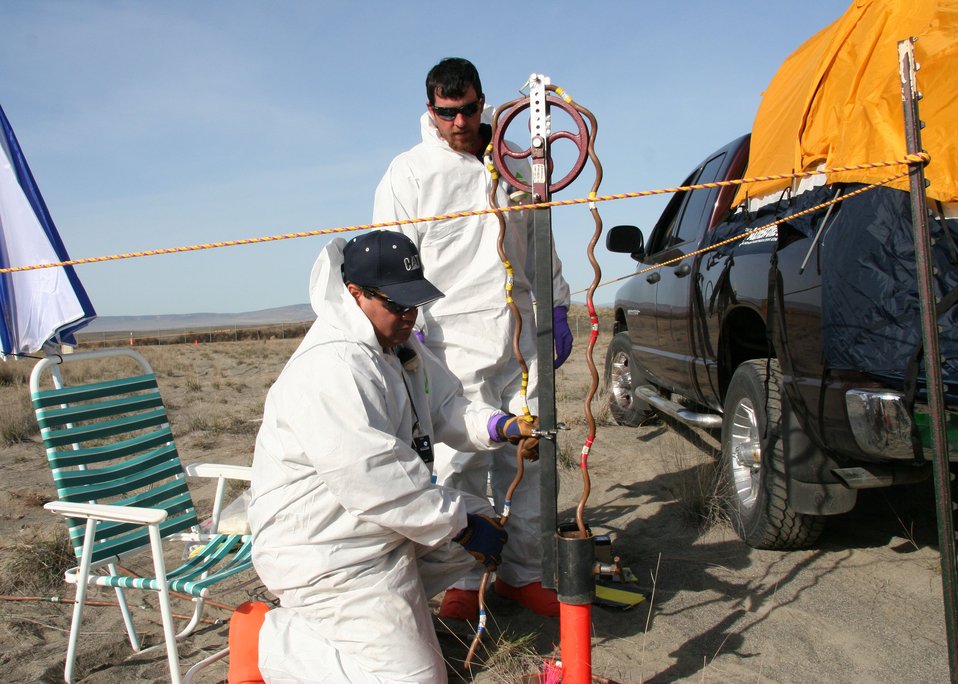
Cold War Waste

A multi-detector probe is lowered into a narrow steel tube called a cone penetrometer to measure radiation activity at one of the most hazardous waste sites at the Hanford Site.

Because disposal records of the burial ground were limited, Washington Closure needed more information before workers can safely begin cleaning up the burial ground.